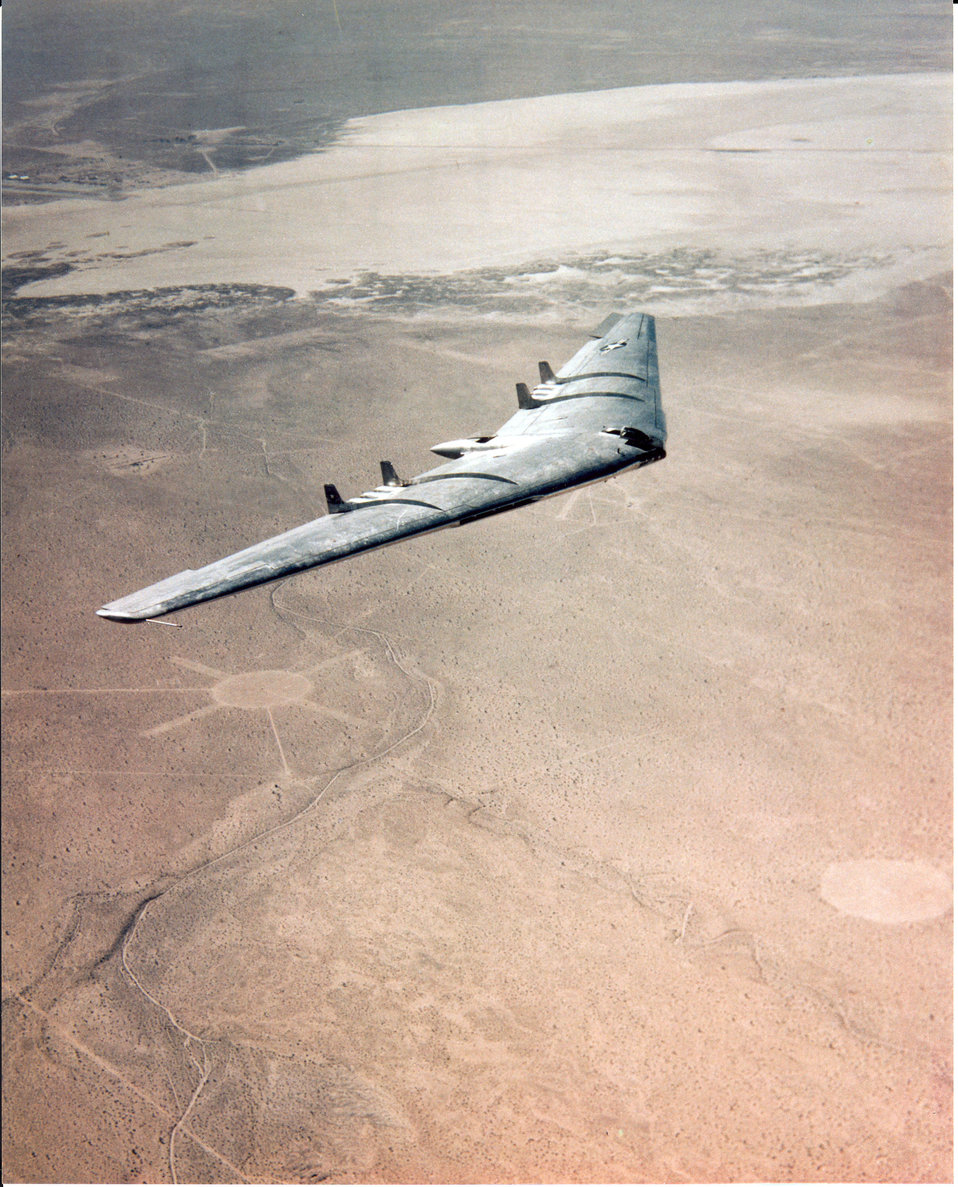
Northrop YB-49 flying wing prototype bomber

The Northrop YB-49 flying wing prototype bomber. Capt. Glen Edwards was killed when a YB-49 crashed June 5, 1948.